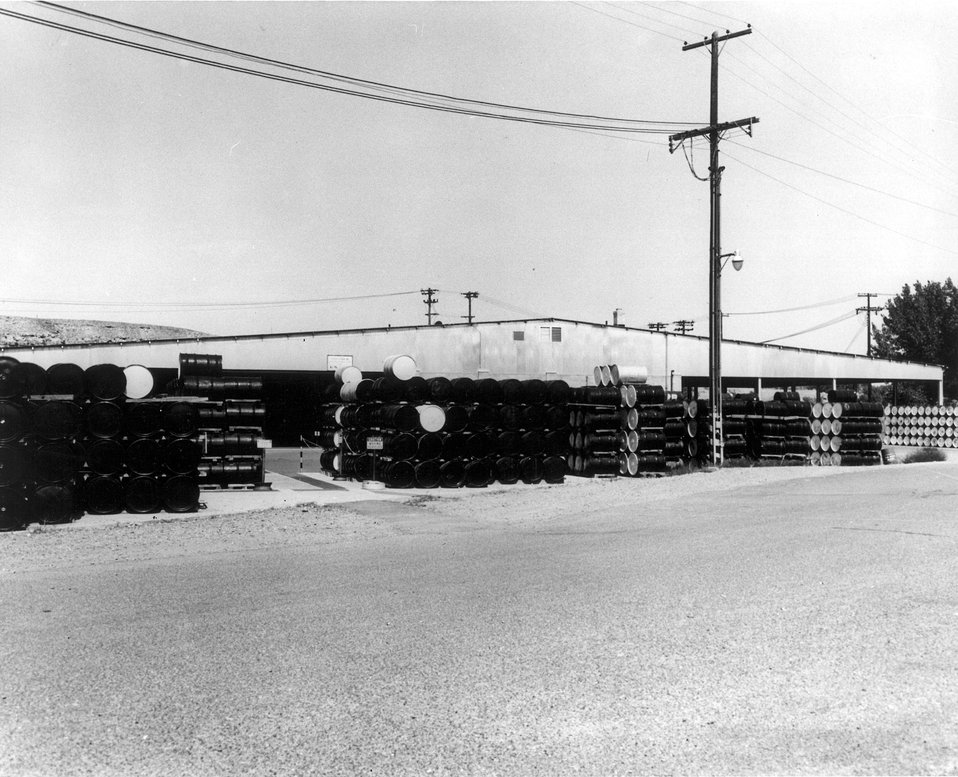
Steel drums of uranium concentrate stacked in front of sampling plant at Energy Research & Development Administration's Grand Junction Office, Grand Junction, Colorado. c. 1968